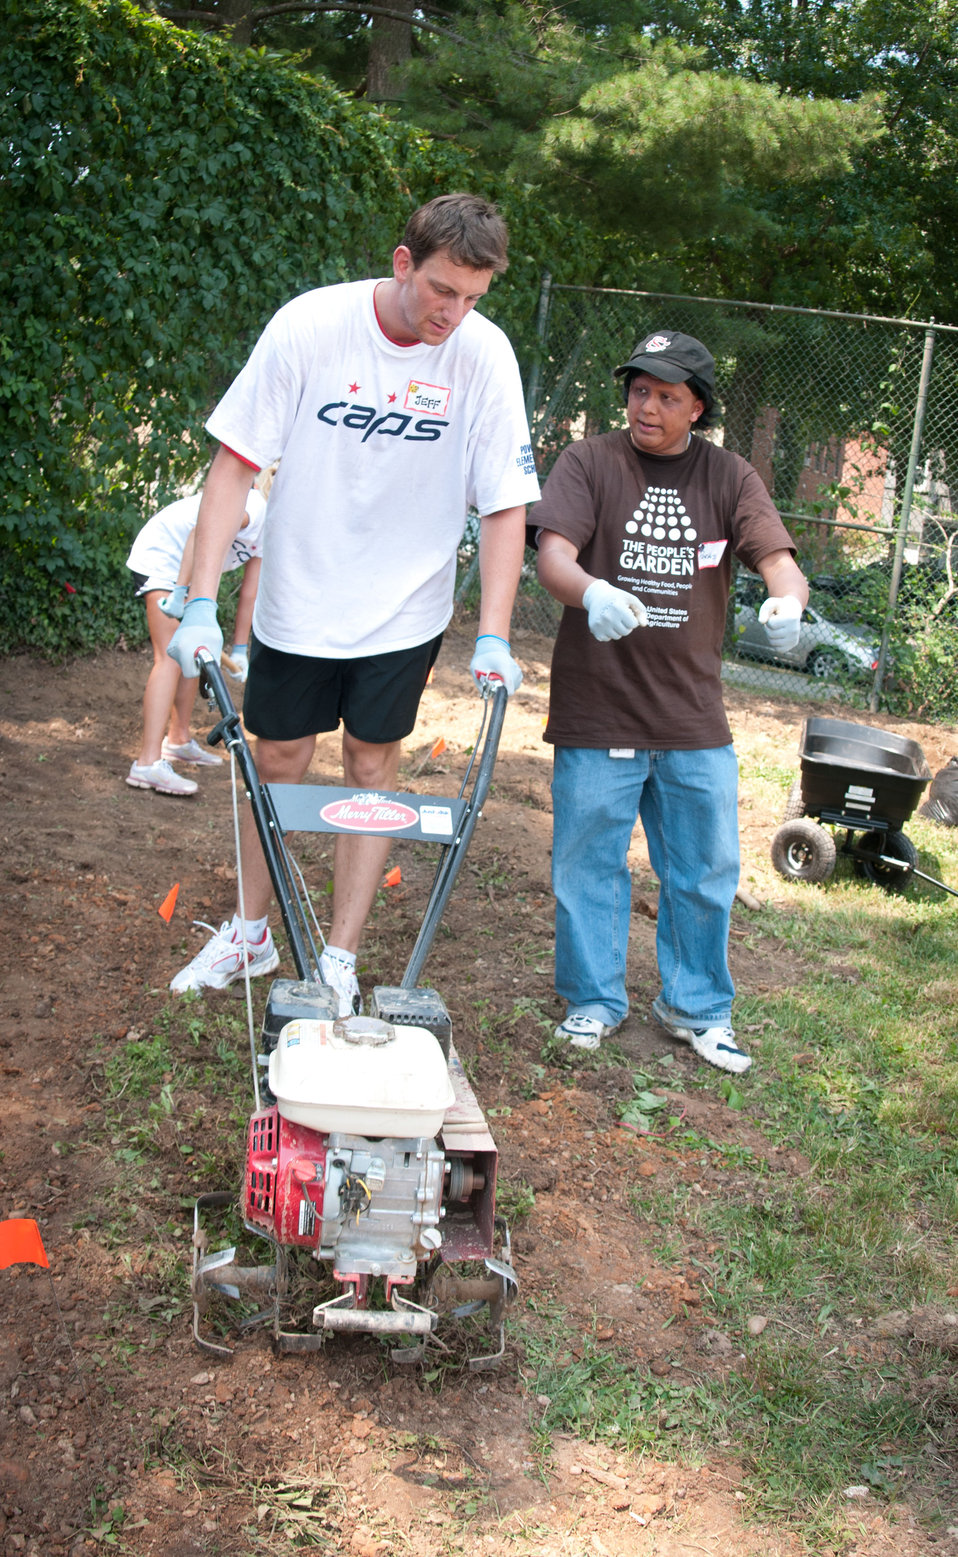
U.S. Department of Agriculture’s Paras G. Kinariwala instructs Washington Capitals defenseman Jeff Schultz how to operate a power tiller during the construction of a People’s Garden, at William B. Powell Elementary School, in Washington, DC, on Thursday, June 9, 2011. The professional hockey player did more than a celebrity appearance; he spent hours working with several project teams; gloves on; putting power and hand tools to their test. Volunteers from U.S. Department of Agriculture People’s Garden Executive Master Gardener program and Washington Capitals hockey organization, along with defenseman Jeff Schultz, and mascot Slapshot transformed a grassy corner of the school playground into a habitat garden and outdoor learning area. Executive Master Gardeners led the volunteer project teams. The Washington Capitals donated new tools; tool shed; garden materials; lunch; most of the volunteers and more. The completed projects included a walking path; tiling of garden plots; planting a bird habitat garden, pollinator garden and native grasses; caterpillar and butterfly plaques; hummingbird and bat house, and tool shed. The garden will later include a picnic area, outdoor classroom, hummingbird garden, Monarch watch garden, native bee garden, and birdbath. USDA challenges its employees to establish People's Gardens at USDA facilities worldwide or on this case, help communities create gardens. People's Gardens vary in size and type, but all have a common purpose - to help the community and the environment.